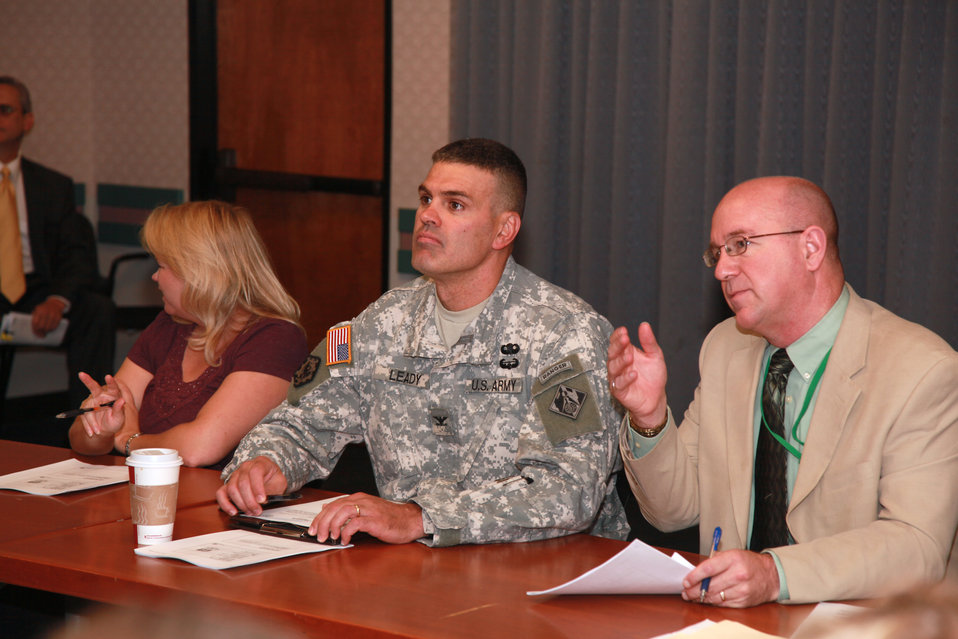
SACRAMENTO,Calif. (Aug.10,2010)--Project Manager Brandon Muncy discusses the progress on a civil works project with the new commander of the Sacramento District COL Bill Leady in a meeting.